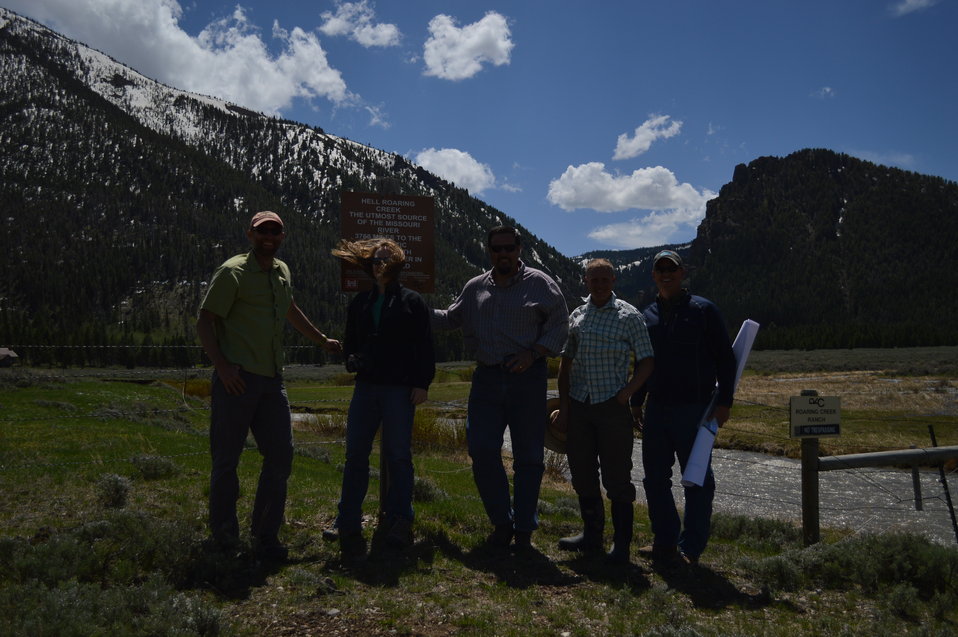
Regional Leadership Visit to Montana 2014